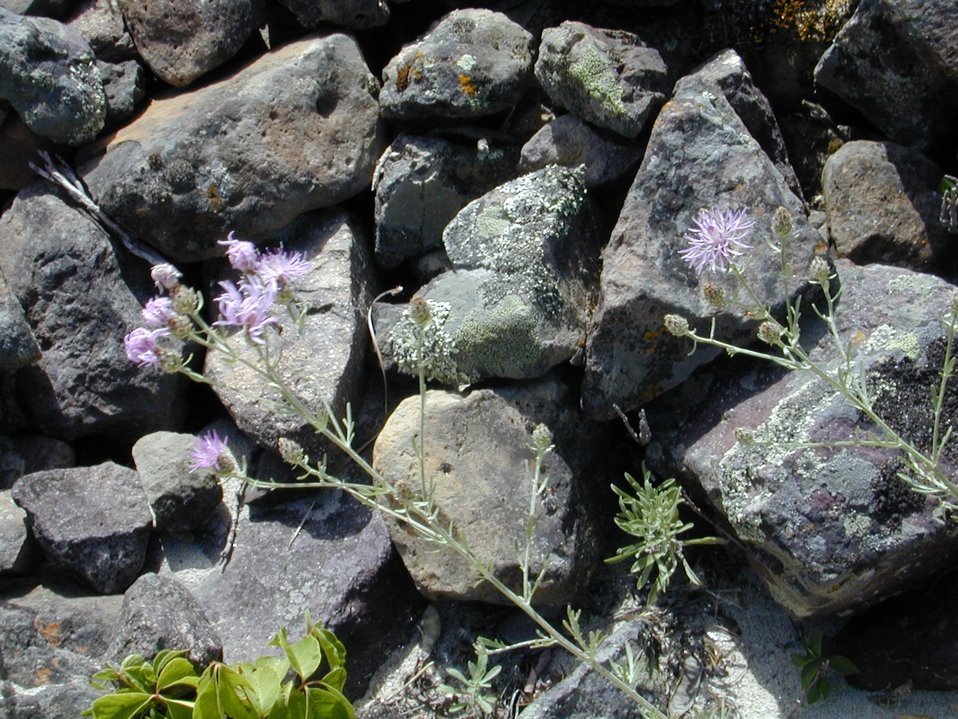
Knapweed Cottonwood Field Office UCSC